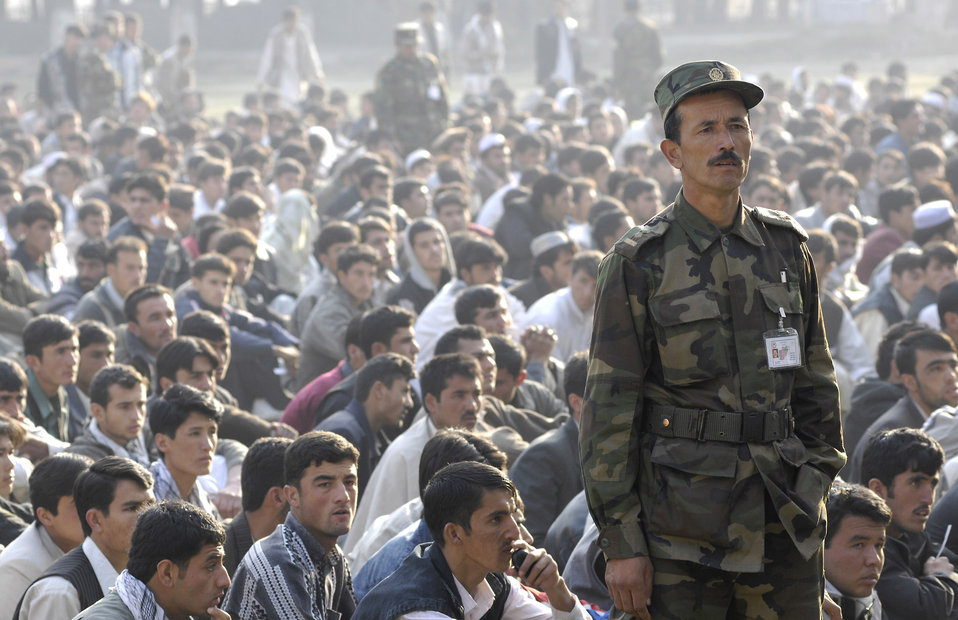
Airmen, Soldiers help establish military academy

An Afghan National Army soldier directs perspective cadets to their assigned groups as the day begins at the ANA Academy, Kabul, Afghanistan, Oct. 25. There are more than 1,800 perspective cadets here, all hoping to be one of the approximately 300 chosen for the new freshman class.